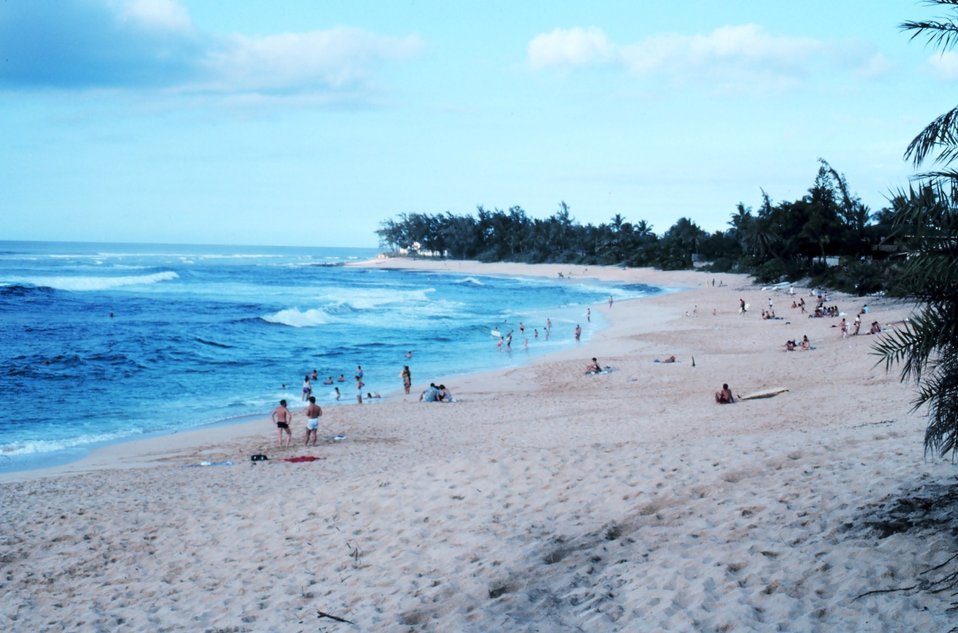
A north shore beach